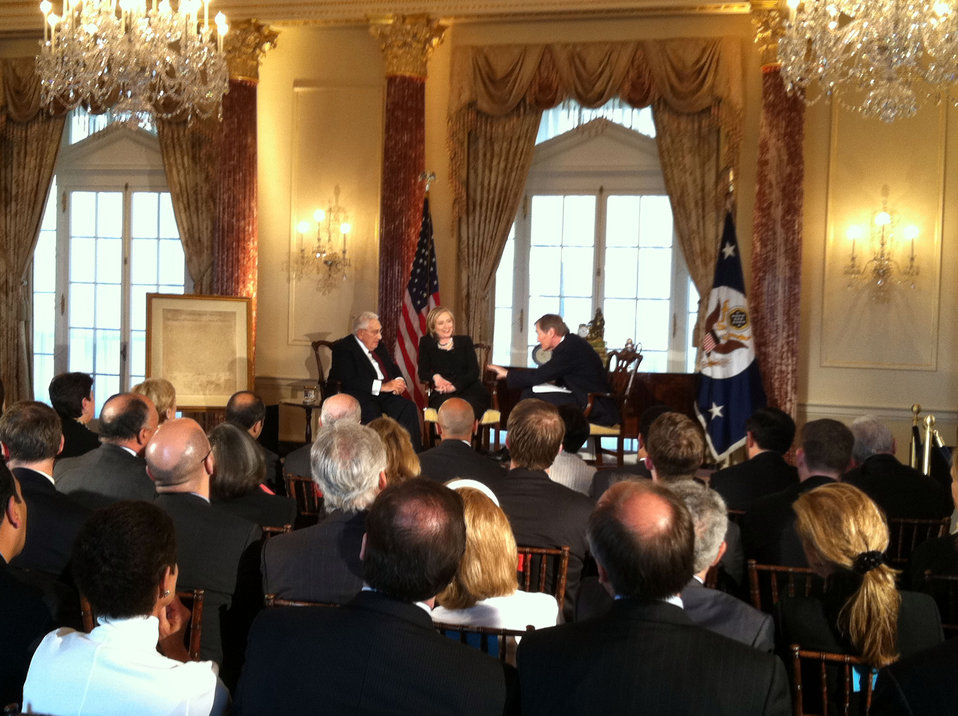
Secretary Clinton and Former Secretary Kissinger Film 'Conversations on Diplomacy, Moderated By Charlie Rose'

U.S. Secretary of State Hillary Rodham Clinton and former U.S. Secretary of State Henry Kissinger film, 'Conversations on Diplomacy, Moderated by Charlie Rose,' at the U.S. Department of State in Washington, D.C., on April 20, 2011.